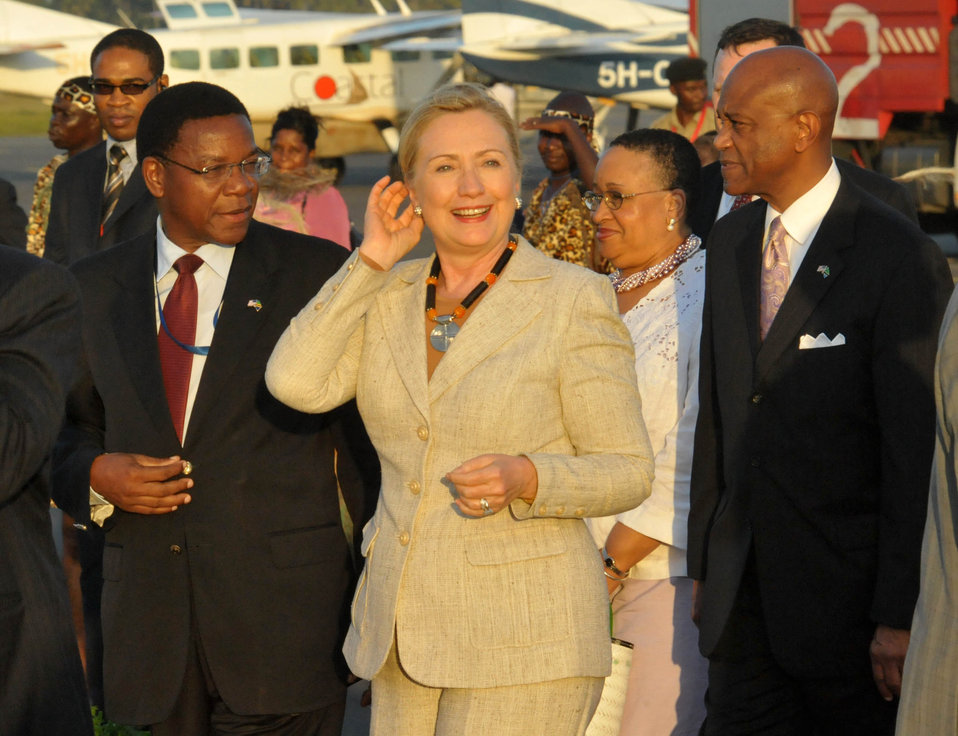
Secretary Clinton Speaks With Tanzanian Foreign Affairs Minister Membe and Ambassador Lenhardt

U.S Secretary of State Hillary Rodham Clinton speaks with Tanzanian Foreign Affairs and International Cooperation Minister Bernard Membe, left, and U.S. Ambassador to Tanzania Alfonso E. Lenhardt, right, on arrival at the Julius Nyerere International Airport in Dar es Salaam, Tanzania, on June 11, 2011.